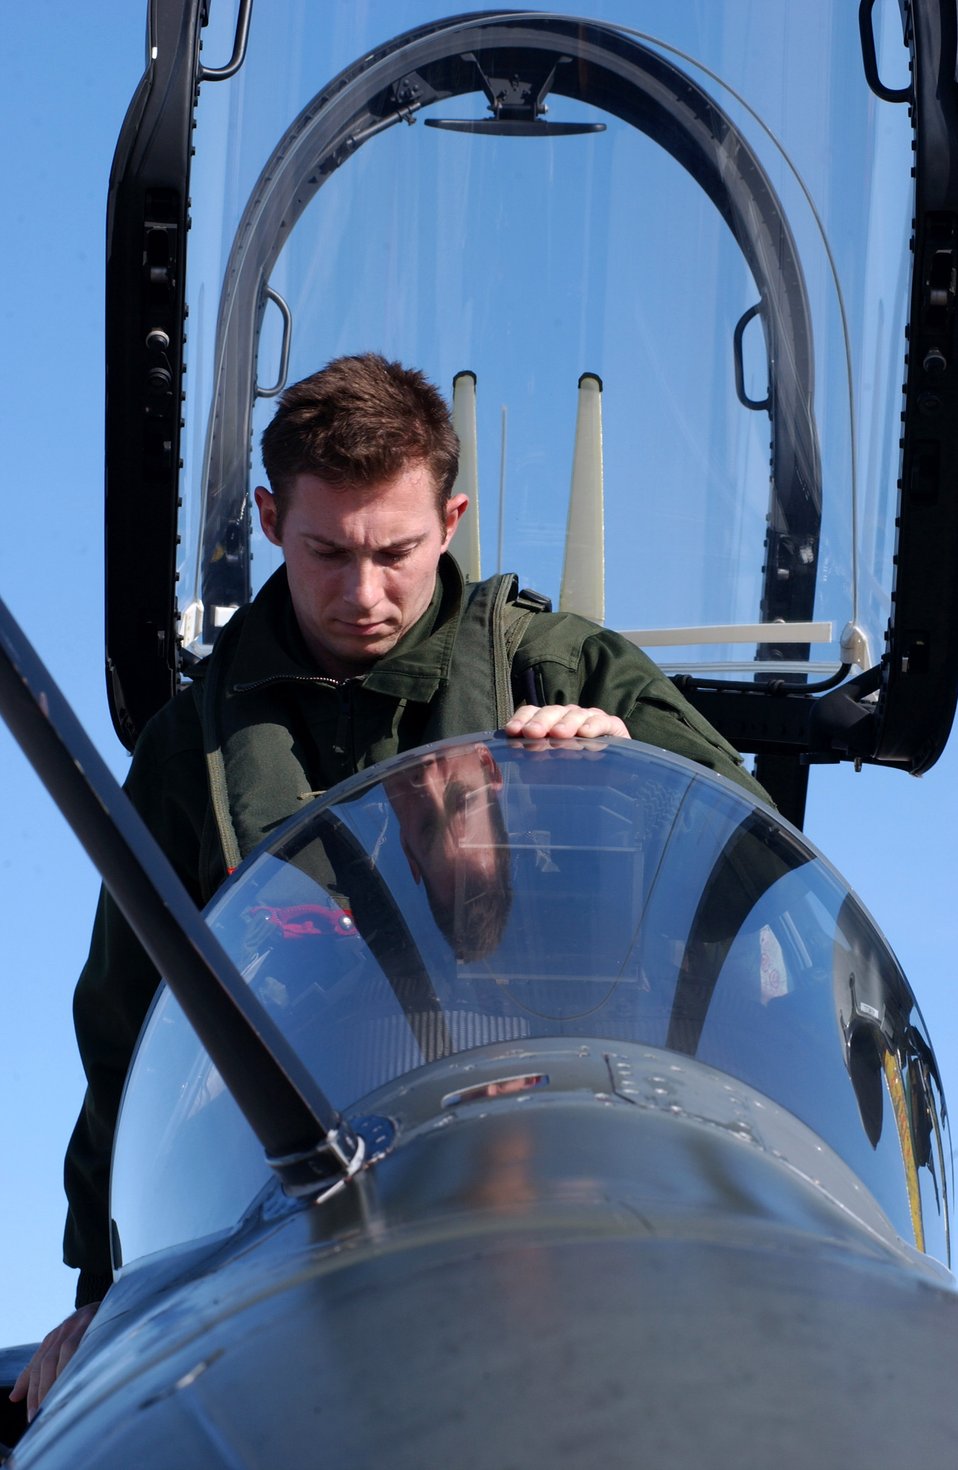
Red Flag forces huddle up at Eielson

A French air force pilot climbs into the cockpit of a M2000 Mirage for a Red Flag-Alaska 07-1 mission April 6 at Eielson Air Force Base, Alaska. This exercise enables aviation units to sharpen their combat skills by flying 10 simulated combat sorties in a realistic threat environment. It is conducted on the Pacific Alaskan Range Complex with air operations flown out of Eielson and Elmendorf Air Force Bases.